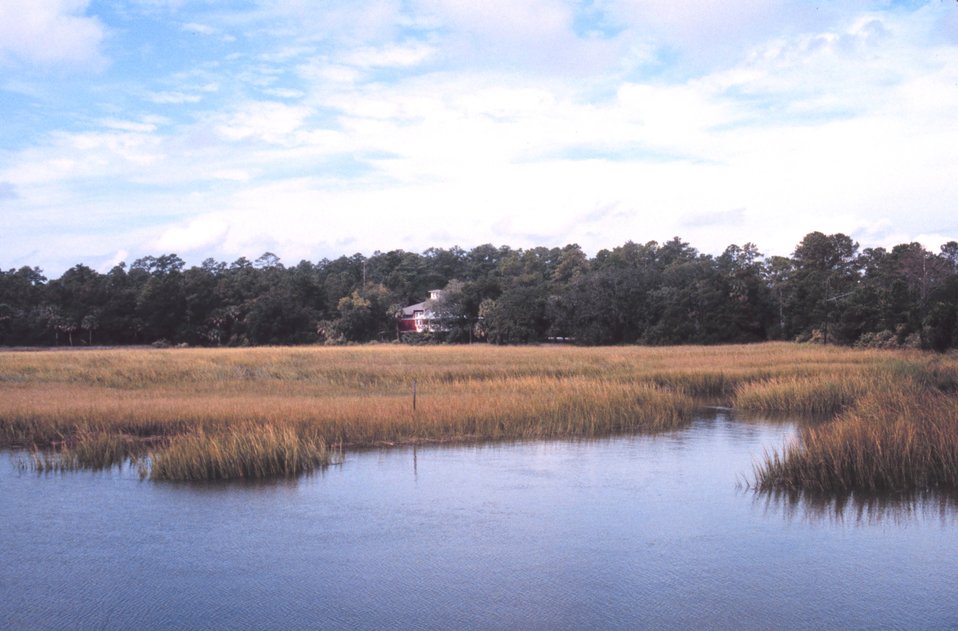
The Sapelo Island visitor center near Meridian Dock on the Georgia mainland. Tours of the Sapelo Island National Estuarine Research Reserve begin here.